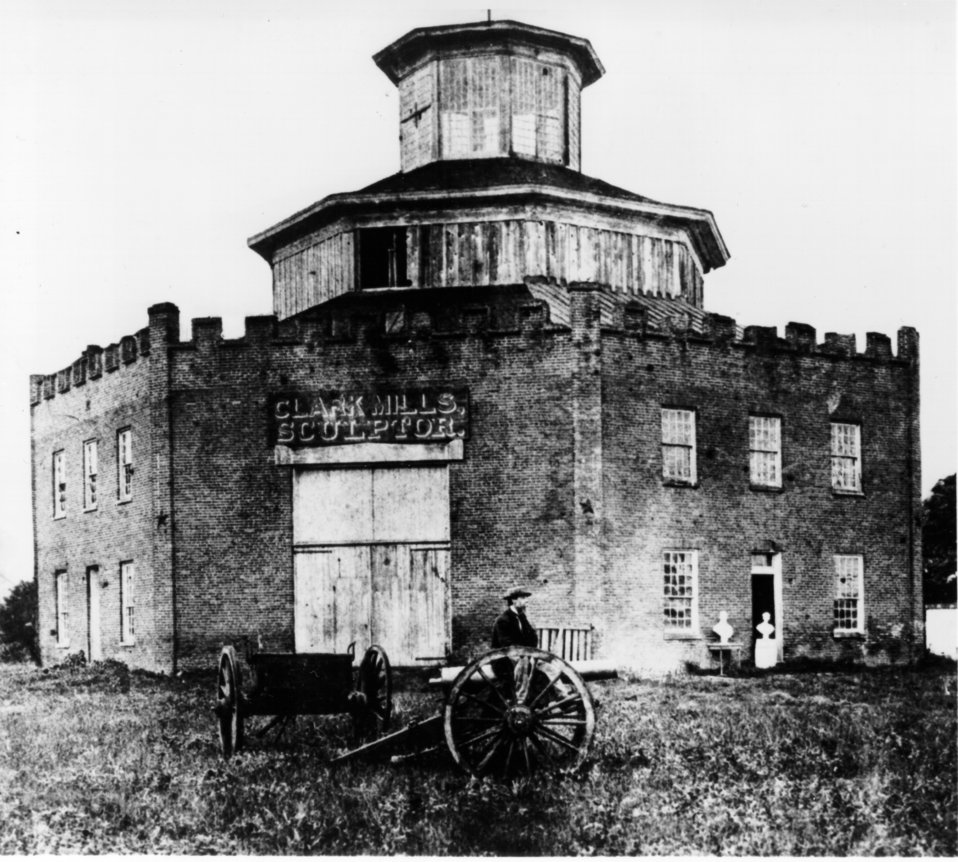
Clark Mills's Foundry

The foundry, located off Bladensburg Road N.E. near 26th Street and the railroad line, inside the District of Columbia, was used to cast the Statue of Freedom for the U.S. Capitol Dome.